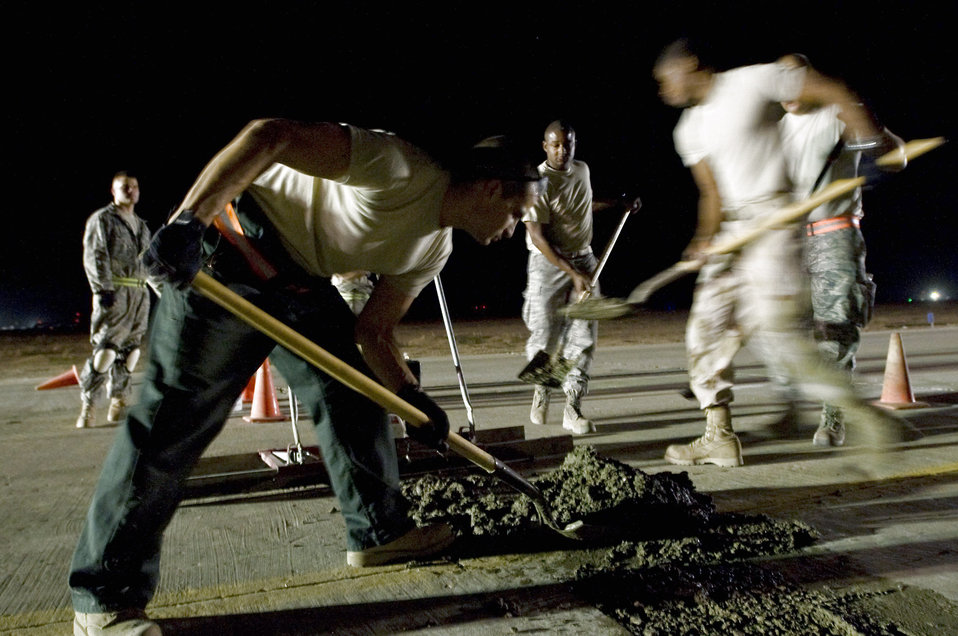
Solid foundation

Airmen with the 407th Expeditionary Civil Engineer Squadron repair a section of runway Sept. 22 at Ali Base, Iraq. Extreme heat, along with normal wear and tear, can damage portions of the flightline, making it unsafe for aircraft.